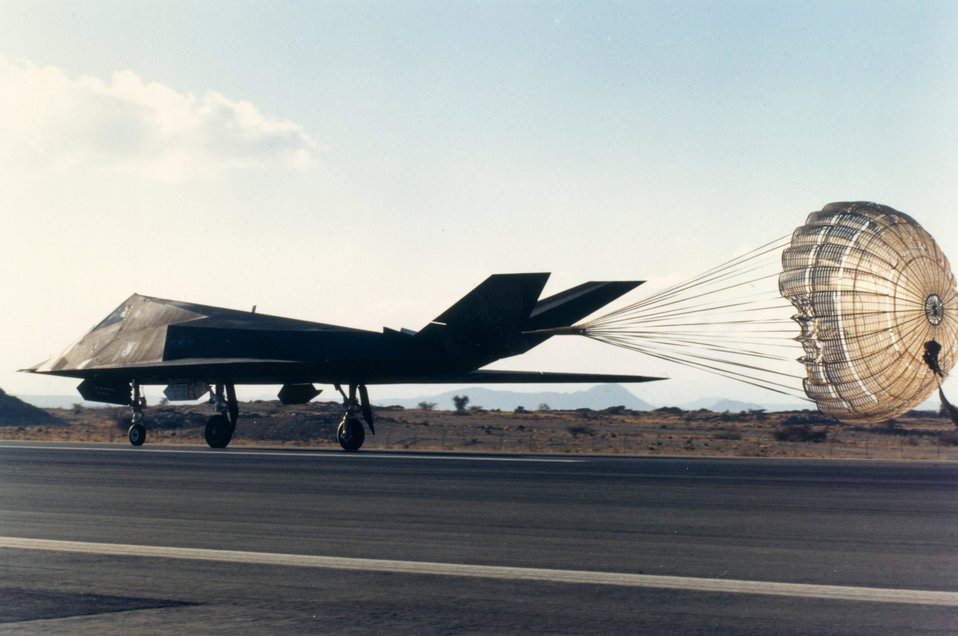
F-117

1980's -- F-117